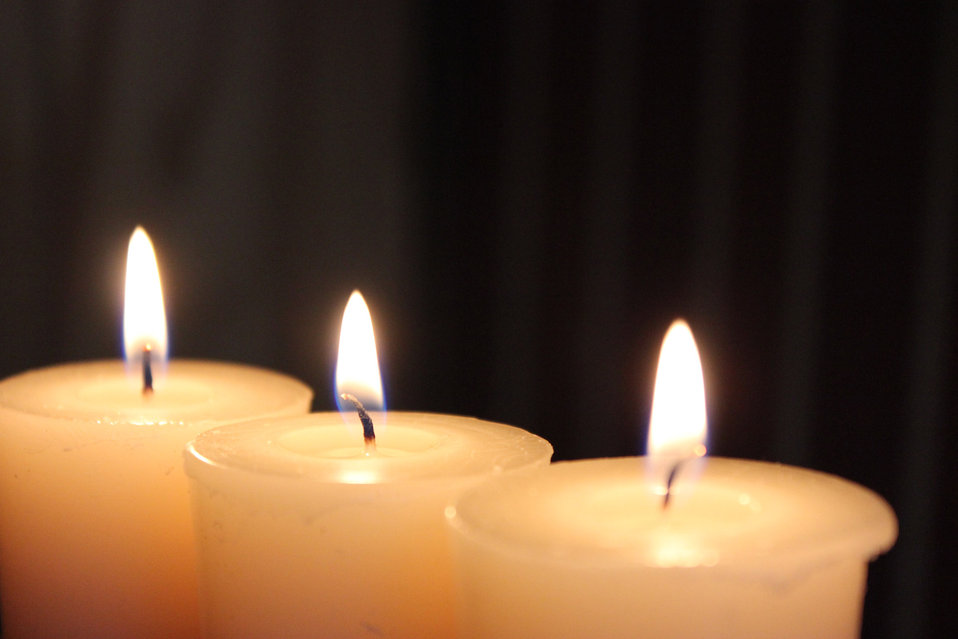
3 candles burning.